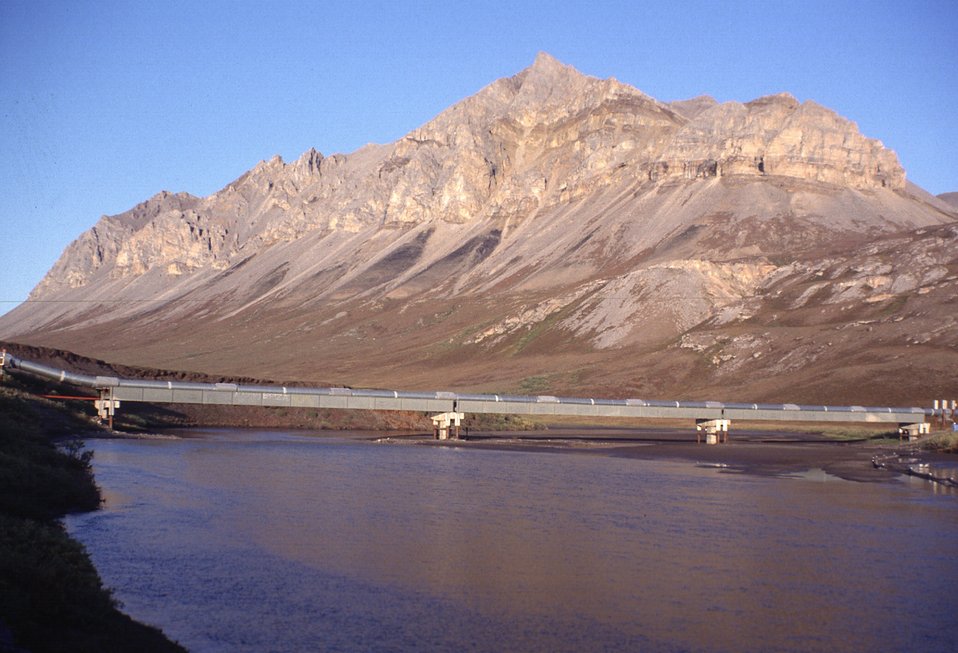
Trans-Alaska Pipeline near Galbraith Lake, Dalton Highway